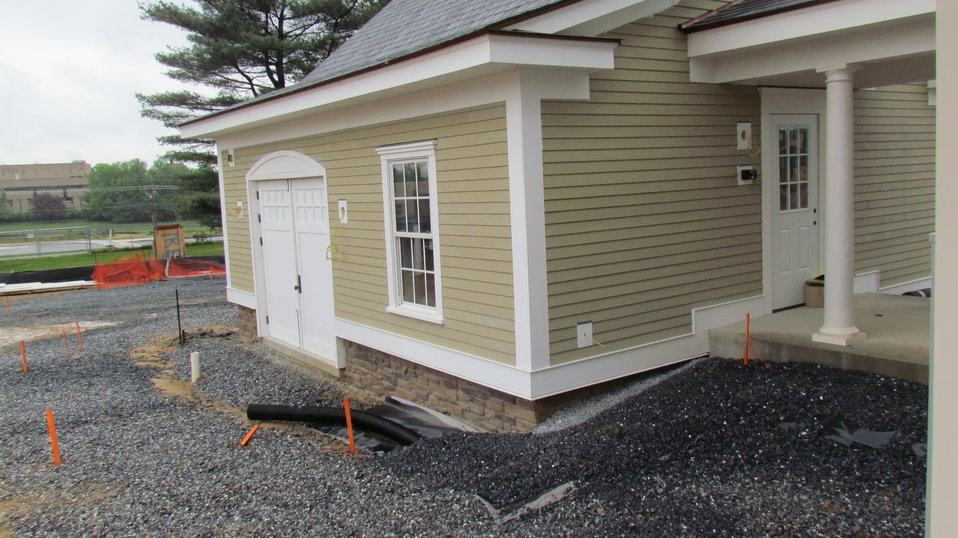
Picture showing trim associated with front of garage. Operational carriage doors aid in moving instrumentation/equipment in and out of facility.